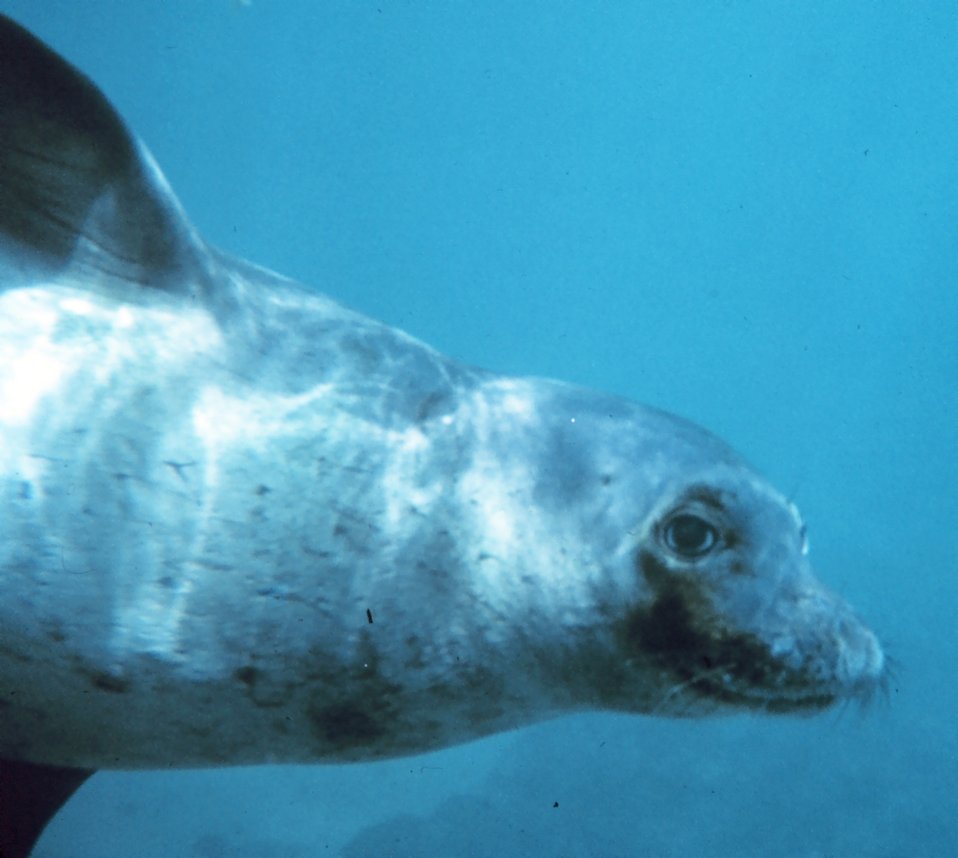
Hawaiian monk seal - Monachus schauinslandi.